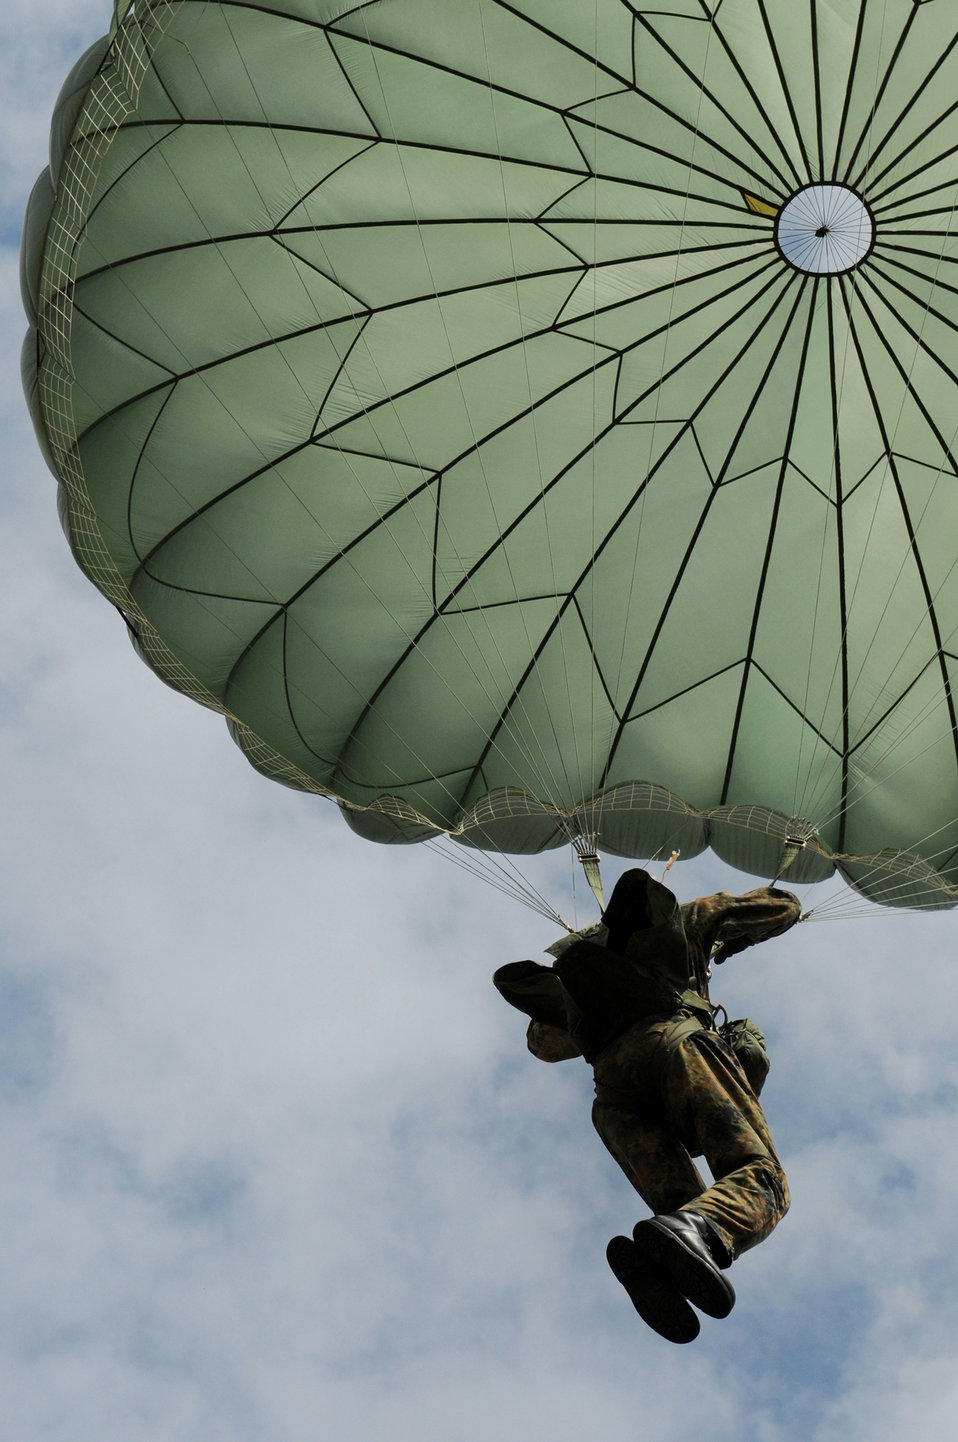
5 NATO countries take part in jump week

German Army soldier Christian Schlueter parachutes onto the Bunker drop zone Aug. 13 in southwestern Germany. U.S. Soldiers and Airmen performed a combined airborne drop with four other NATO countries during International Jump Week.